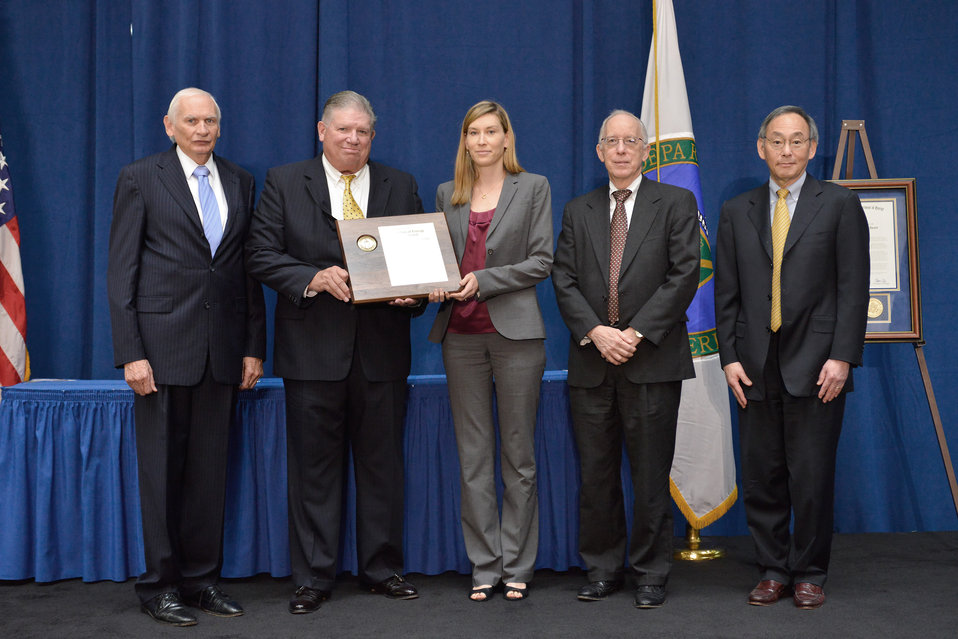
Strategic Petroleum Reserve 2011 Drawdown Team

Awardees (not all pictured): Jorge Aguinaga, Racheal P. Baldwin, Lansen C. Barrow, Michael Corule, Gary F. Durel, Patricia C. Ehrle, Julianna R. Gallego, Kelley M. Gele
Lionel J. Gele, Jr., William C. Gibson, Jr., Ralph R. Habbaz, Nathan T. Harvey, Marshall, B. Jackson, David F. Johnson, Robert J. Kahl III, Allison W. Kuhn, Nancy T. Marland, Michael E. McWilliams, Lindsa Partusch-Goldstein, Anthony Earl Pate, John M. Powell, Anne M. Quern, James M. Quern, Grant G. Rivera, Suresh M. Sevak, Nabil A. Shourbaji, George R. Shutt, Sheldra A. Wormhoudt. The Strategic Petroleum Reserve 2011 Drawdown Team is recognized for exemplary performance in the successful sale, drawdown and delivery of 30 million barrels of crude oil from the Strategic Petroleum Reserve after the President ordered a drawdown of the Reserve to join the International Energy Agency’s collective response to the shutdown of Libya's oil industry. The 2011 Strategic Petroleum Reserve drawdown was the largest emergency release of strategic petroleum stocks ever accomplished and was completed on time and without any accidents, environmental incidents, or delivery problems. It was also the first time that the President did not provide a waiver to Jones Act requirements that would have allowed foreign marine vessels to load and deliver the Strategic Petroleum Reserve’s crude oil.